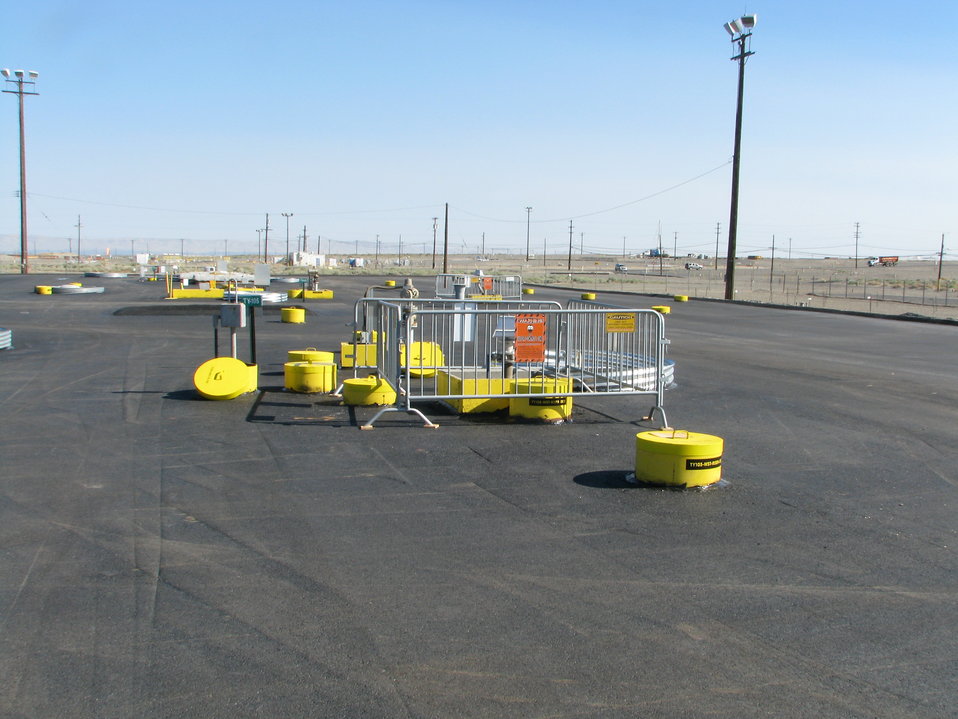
Environmental Protection, Modernization and Safety Top List of ORP Accomplishments

On a warm, sunny day in September, workers finished smoothing a layer of high-density asphalt over the top of one of Hanford’s single-shell tank farms, marking the completion of an interim moisture barrier funded by nearly $4 million in American Recovery and Reinvestment Act (ARRA) funding.